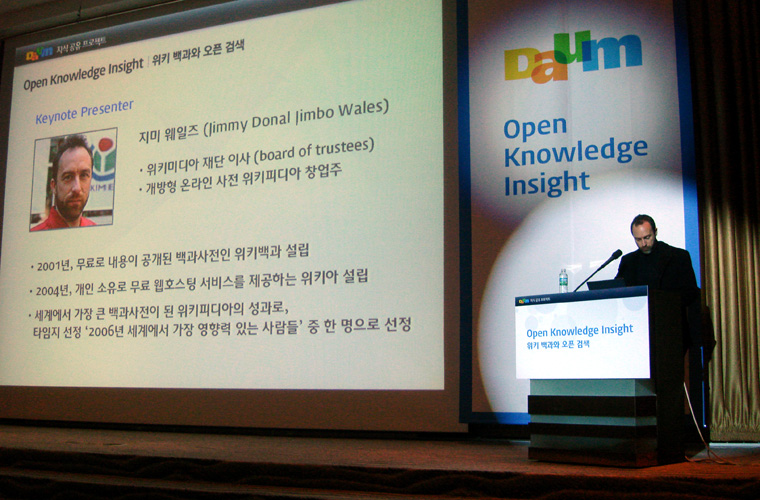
한국어: Open Knowledge Insight 콘퍼런스에서 이야기 중인 짐보 웨일스. 日本語: Open Knowledge Insight カンファレンスで発表中のジンボ・ウェールズ